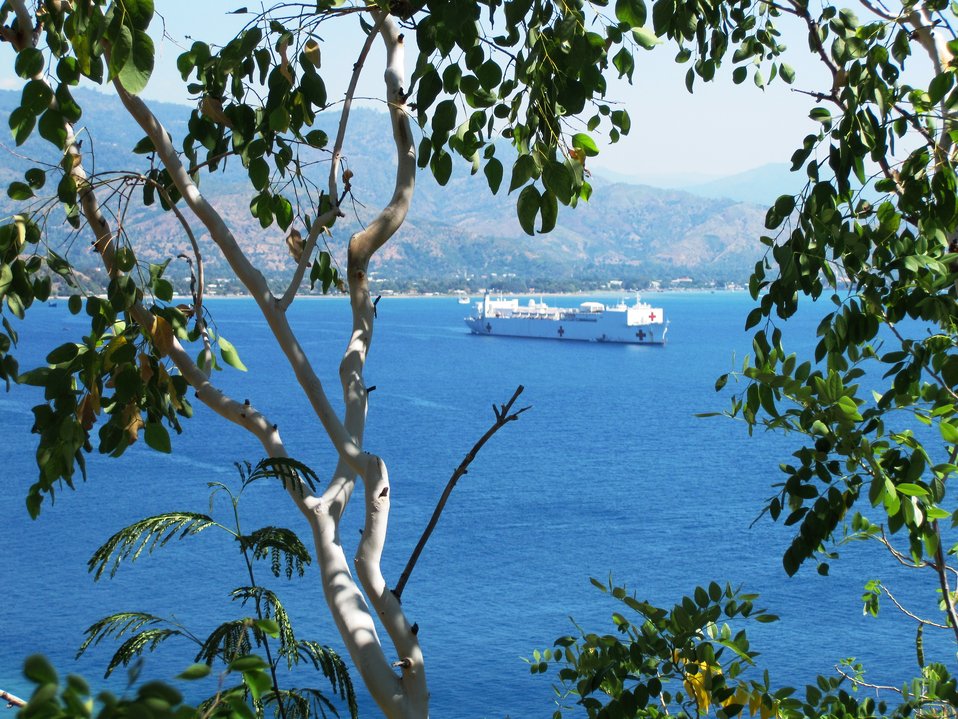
USNS Mercy anchored off Dili, Timor-Leste, in August 2010 during Pacific Partnership 2010.